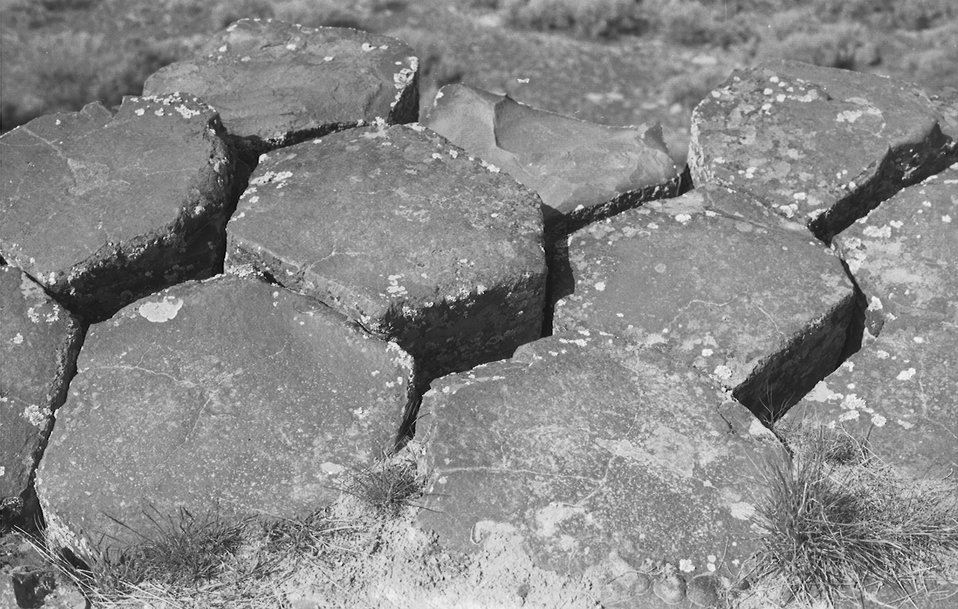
Separation of basalt columns Hexagonal Basalt UCSC Upper Columbia Salmon Clearwater District